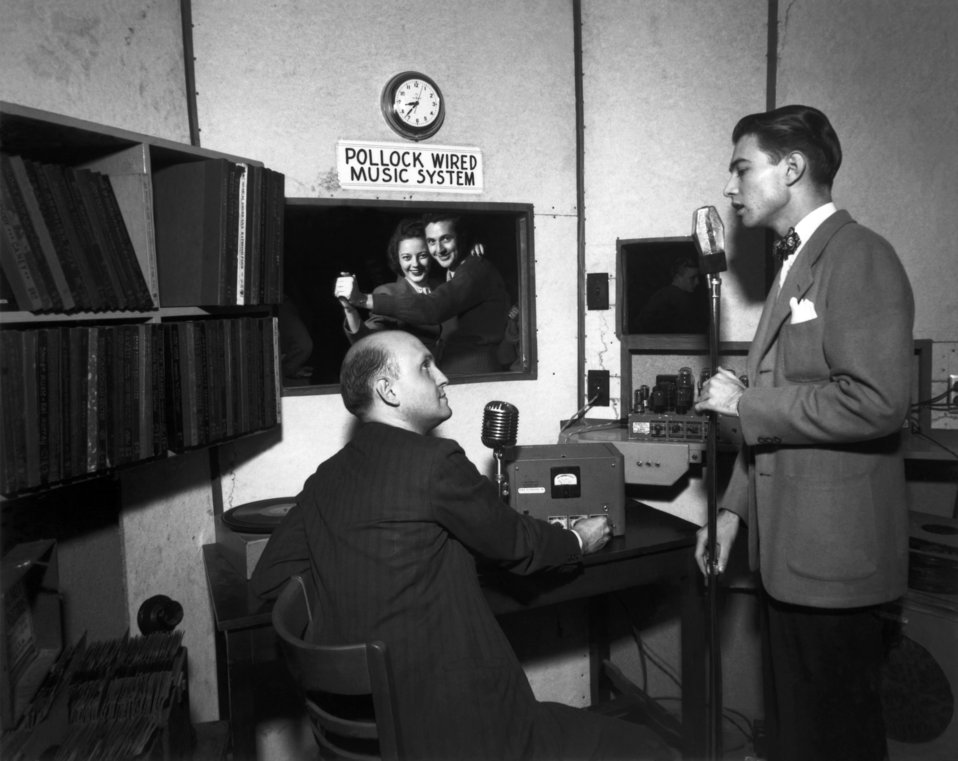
Bill Pollock Music Man Oak Ridge

1301 DOE photo by Ed Westcott

Bill Pollock Music Man Oak Ridge Tennessee 1945